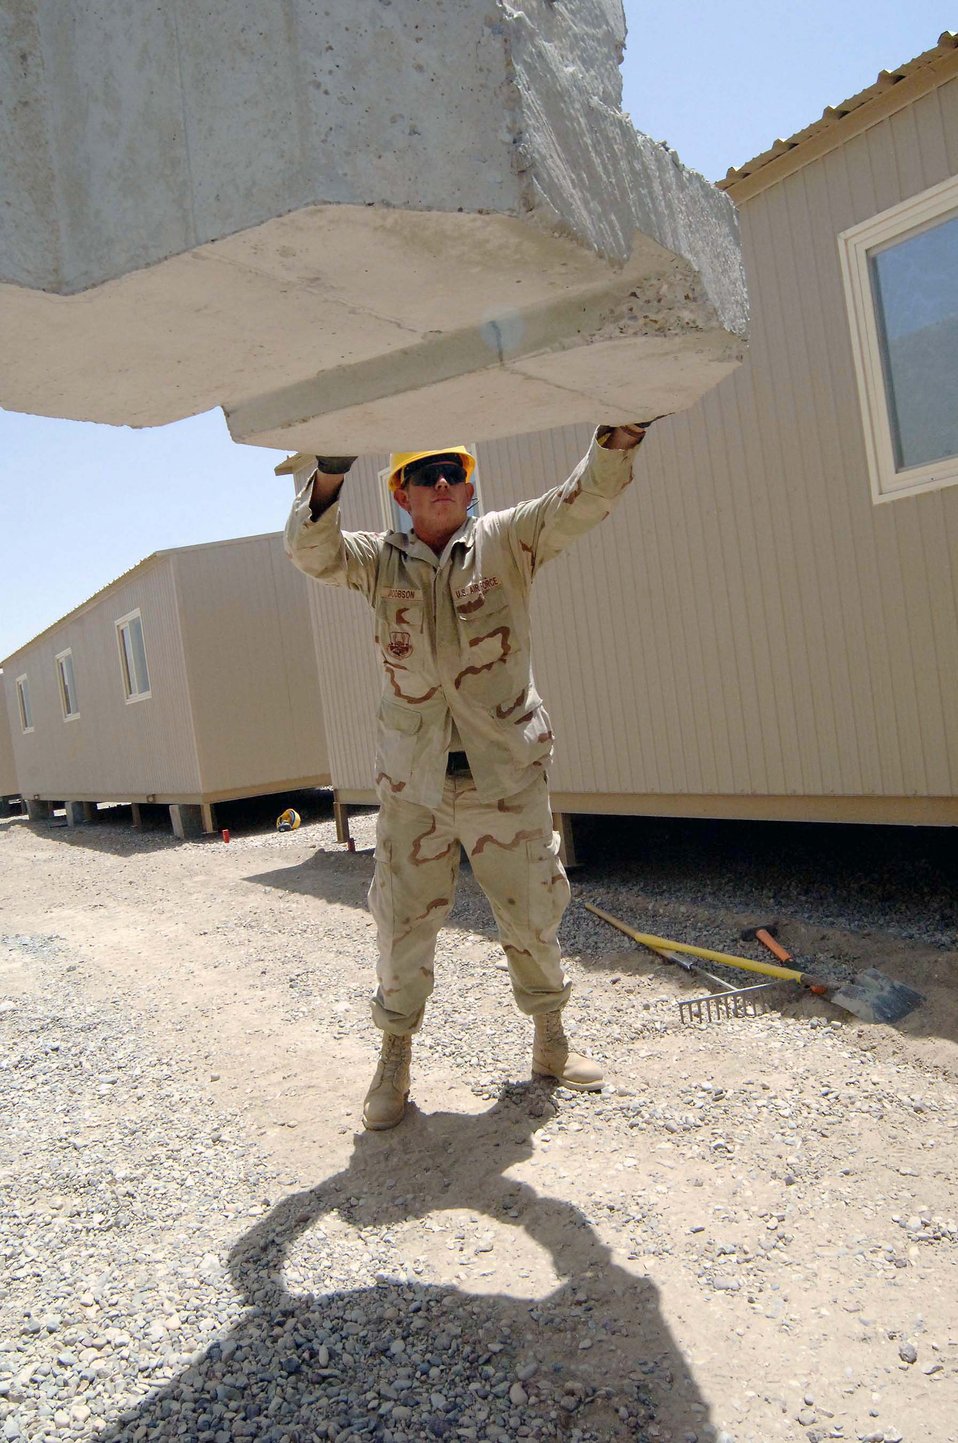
Concrete barriers save lives

Senior Airman Aaron Jacobson guides a five-ton T barrier into place June 27 at Sather Air Base, Iraq. The barrier sections, moved by large cranes, are part of a concrete wall being pieced together for protection against incoming rockets and mortars. Airman Jacobson is a pavement specialist with the 447th Expeditionary Civil Engineer Squadron.